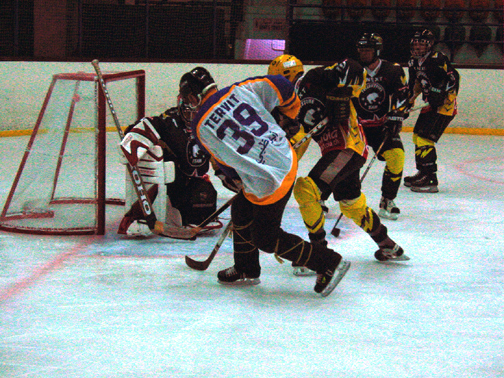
Ice hockey in the desert

SOUTHWEST ASIA -- Senior Master Sgt. Daniel Morin, in the white jersey, takes a shot on goal during one of his team's ice hockey tournament games. He had to borrow a teammate's jersey to be able to play, thus the different name on his back. He is the 380th Expeditionary Maintenance Operations Squadron's quality assurance superintendent at a forward-deployed location.